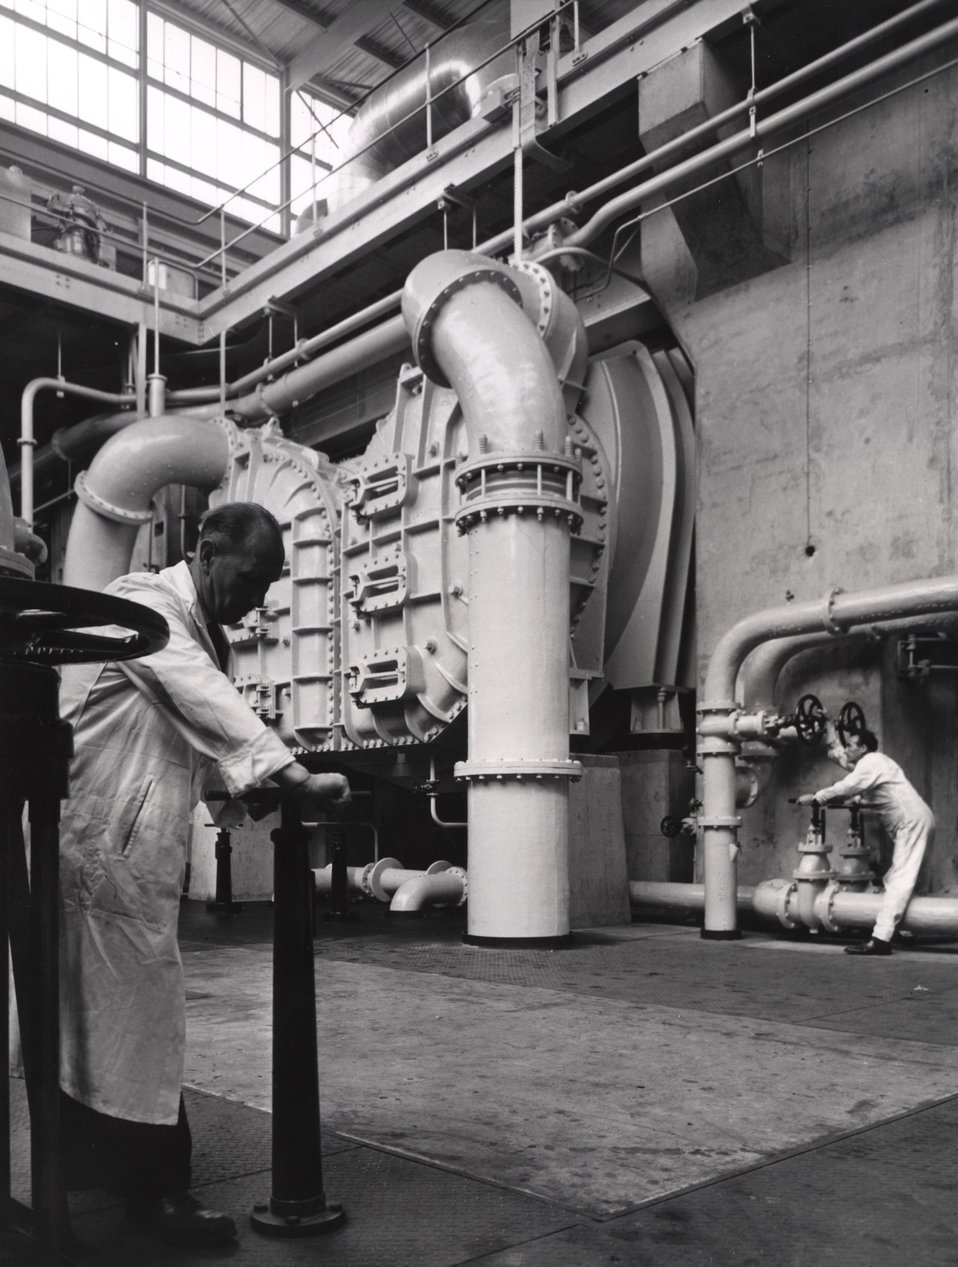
Calder Hall. The basement of the turbine hall of the Calder Hall A atomic power station showing on the right the massive one piece concrete plinth that supports one 23,000 k.w. turbo alternator set. c. 1956